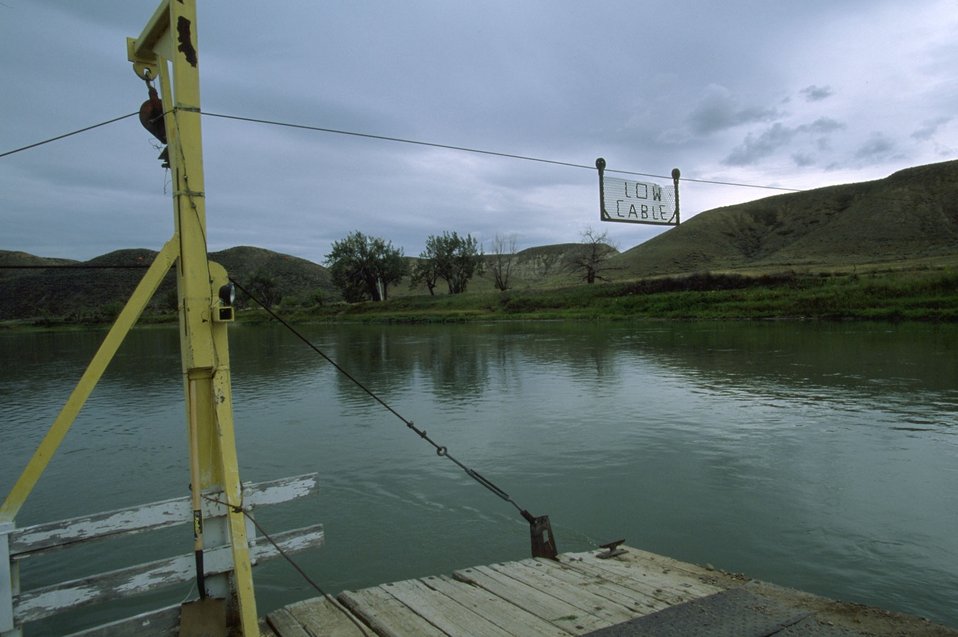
Stafford Ferry across the Upper Missouri River